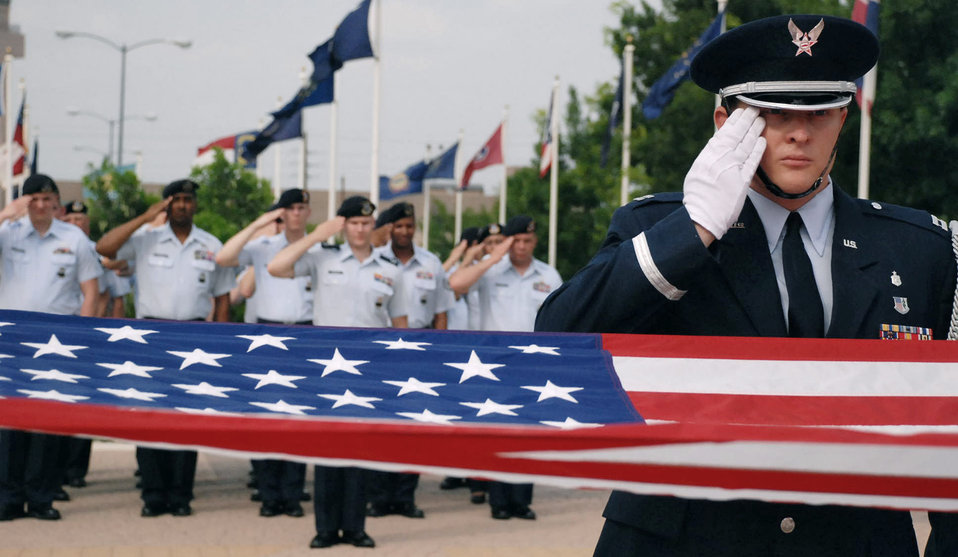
To serve and protect

Capt. Bruce Auville, a member of the Laughlin Honor Guard, pays respects as members of the 47th Security Forces Squadron follow his lead during a formal retreat May 15 at Laughlin Air Force Base, Texas, held in honor of National Peace Officers Memorial Day.